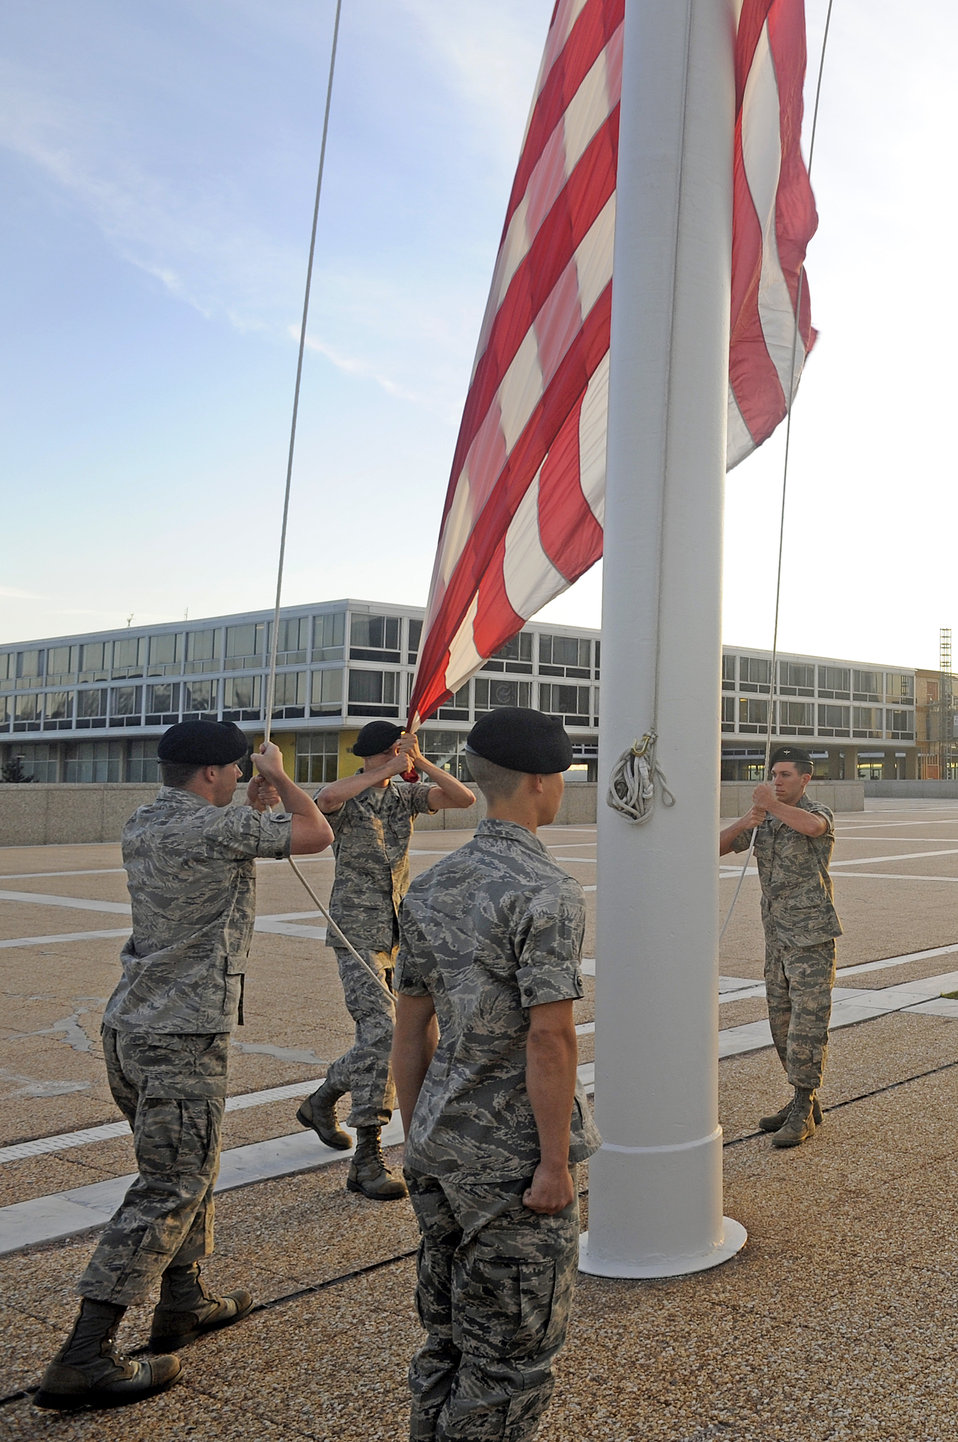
Reveille Ceremony

The cadet flag detail raises the American flag during a reveille formation on the terrazzo in honor of Patriot's Day and the Fallen Heroes of 9/11 on Sept. 11, 2009, at U.S. Air Force Academy, Colo.